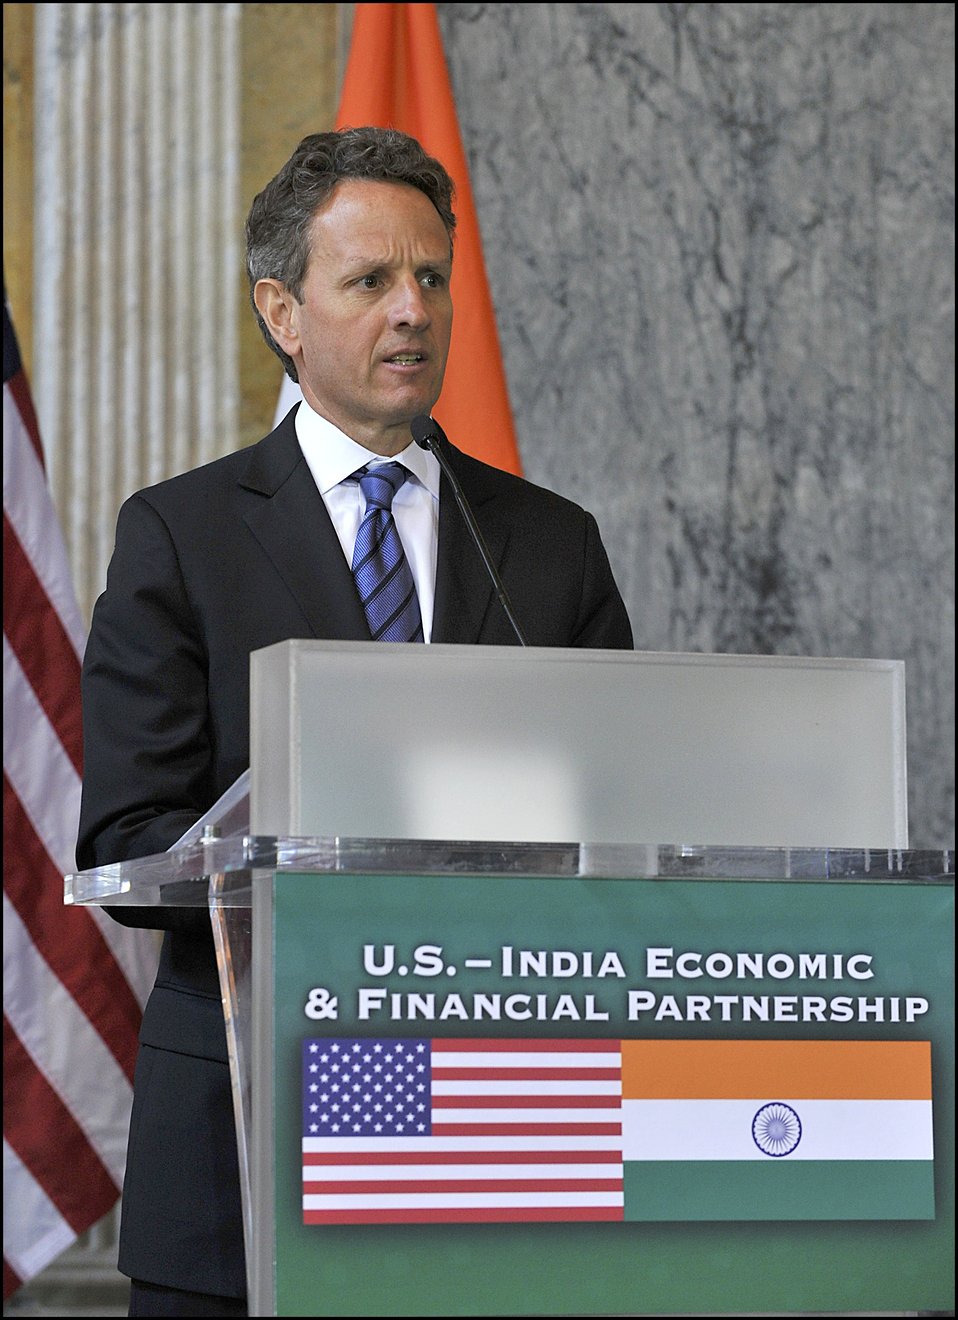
2011 U.S.-India Partnership

'In the United States, we aren’t just watching India’s rise as an economic power, we support it. We encourage it. And we want to help advance it. India’s growth is good for us, just as our growth is good for India. I mentioned earlier that India is now our 12th largest trading partner; the President’s goal is to have India become one of our top 10,' said Secretary Geithner at the joint press conference at the conclusion of the second annual U.S.-India Economic and Financial Partnership.